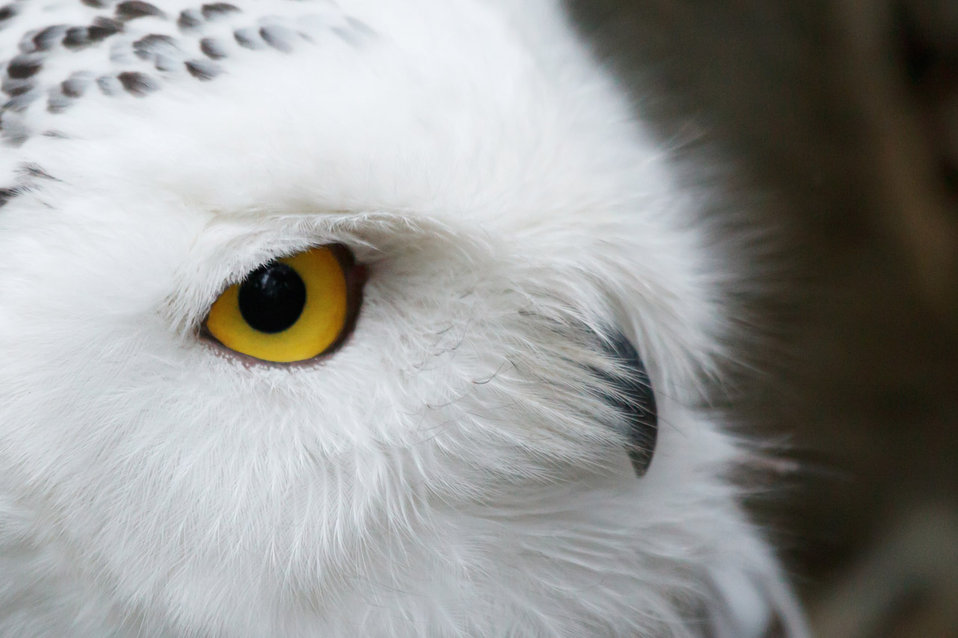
Snowy owl eye

Snowy owl's eye - bubo scandiacus.